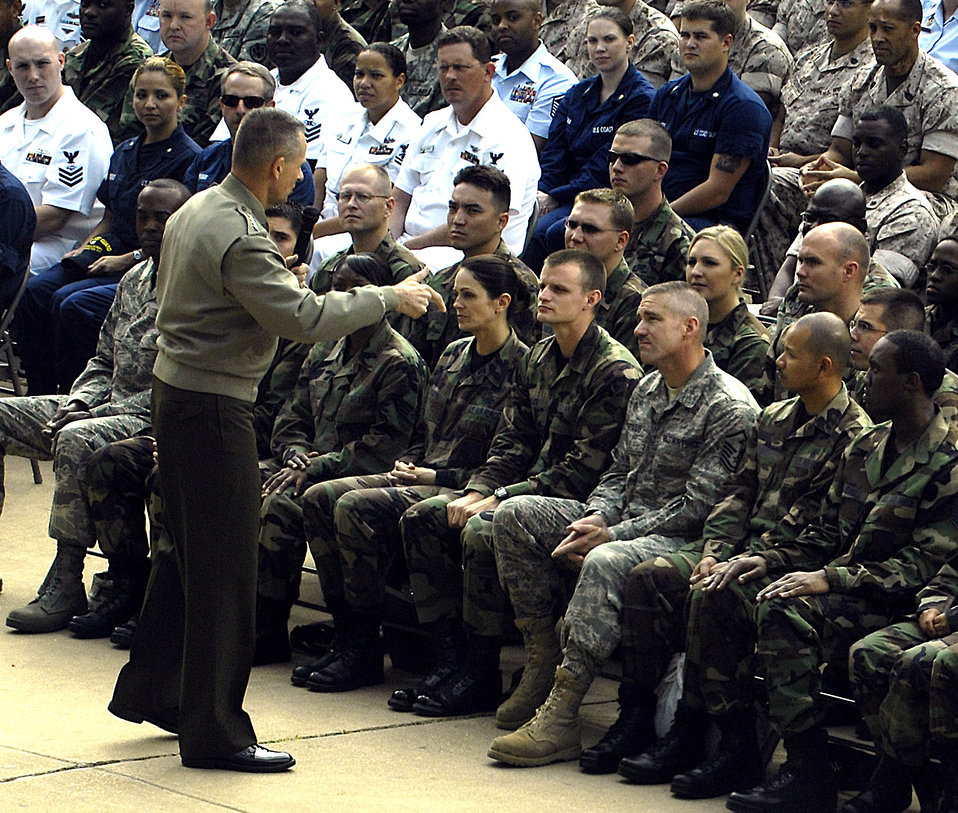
Farewell from the chairman

Marine Corps Gen. Peter Pace, chairman of the Joint Chiefs of Staff, thanks enlisted servicemembers for their dedication and bids them farewell during an enlisted call at the Pentagon Sept. 20.